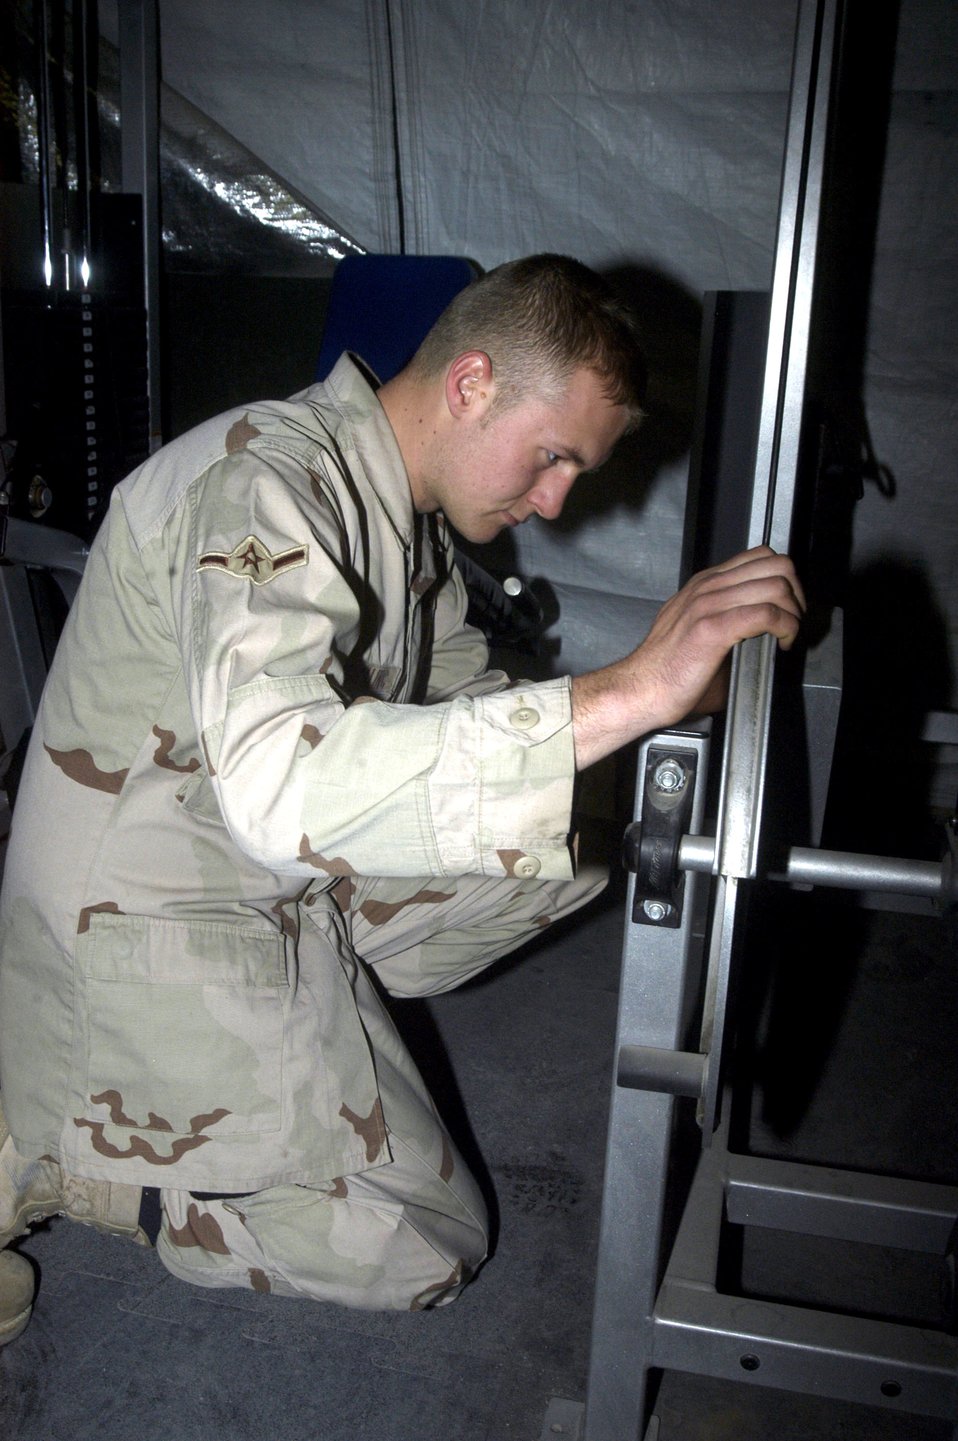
Serving through the season: Airman Cameron Houghtaling Jr.

Airman Cameron Houghtaling Jr. is a Services technician deployed to Bagram Air Base, Afghanistan, from Lajes Field, Azores.